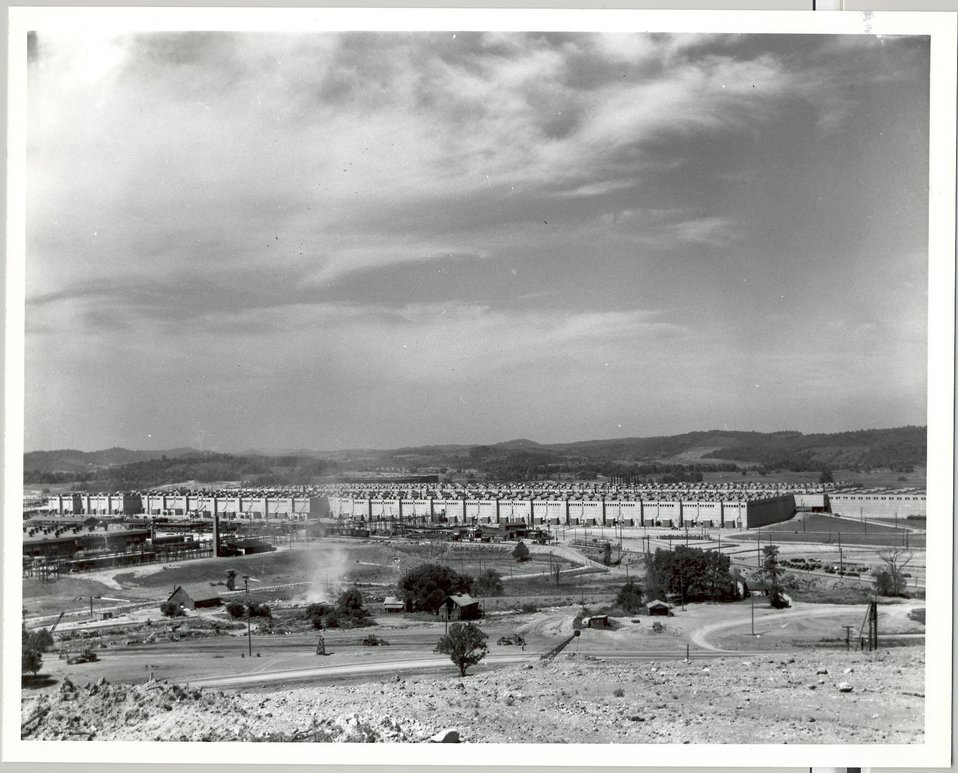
View of K-25 Bldg from Quarry Hill